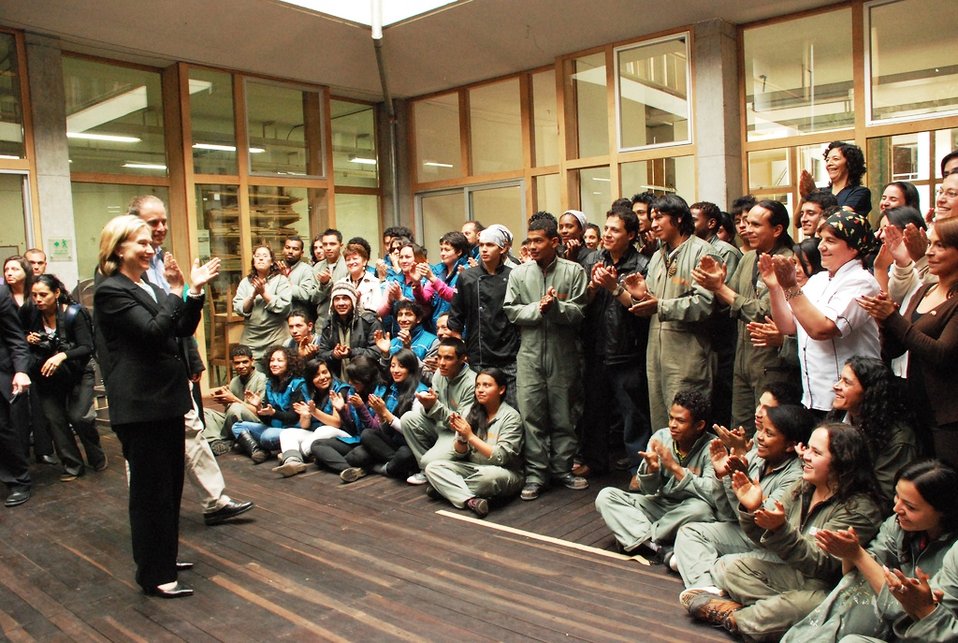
Secretary Clinton Speaks With Students at Escuela Taller de Bogotá

U.S. Secretary of State Hillary Rodham Clinton speaks with students at Escuela Taller de Bogotá, a vocational school for at-risk youth supported by USAID, in Bogotá, Colombia, on June 9, 2010.